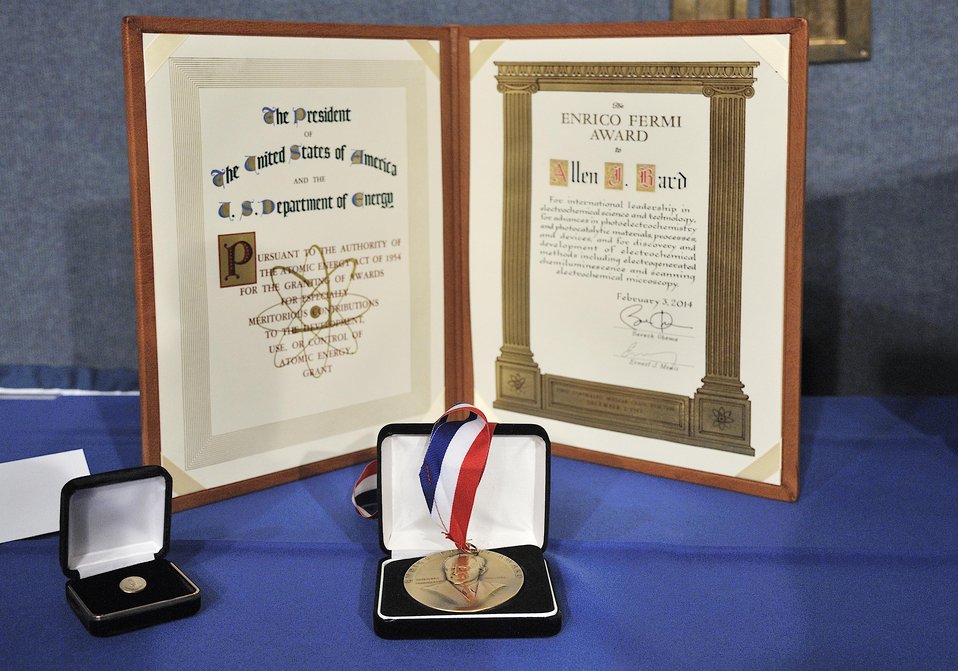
FERMI AWARD AND MEDAL FOR ALLEN J. BARD.